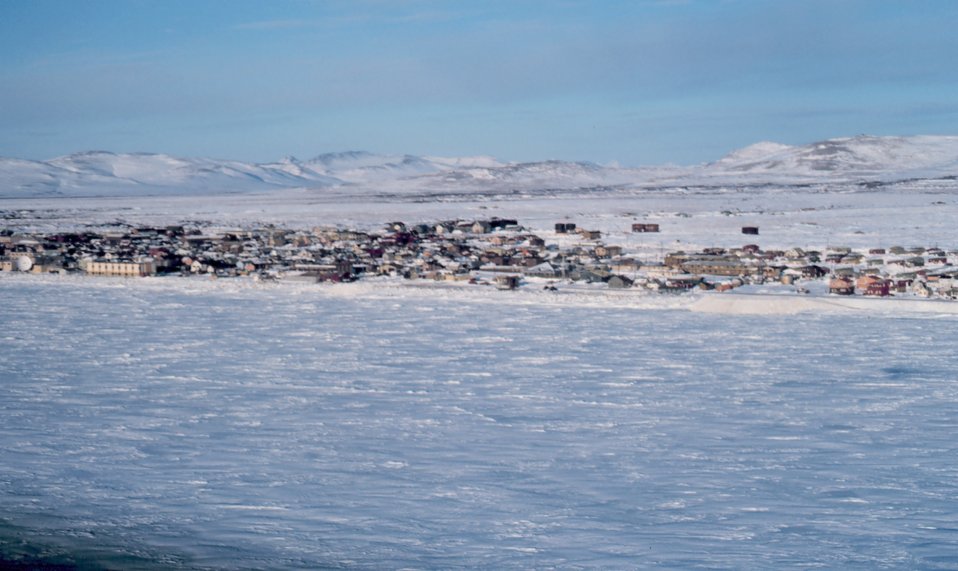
Aerial view of Nome before the ice broke up